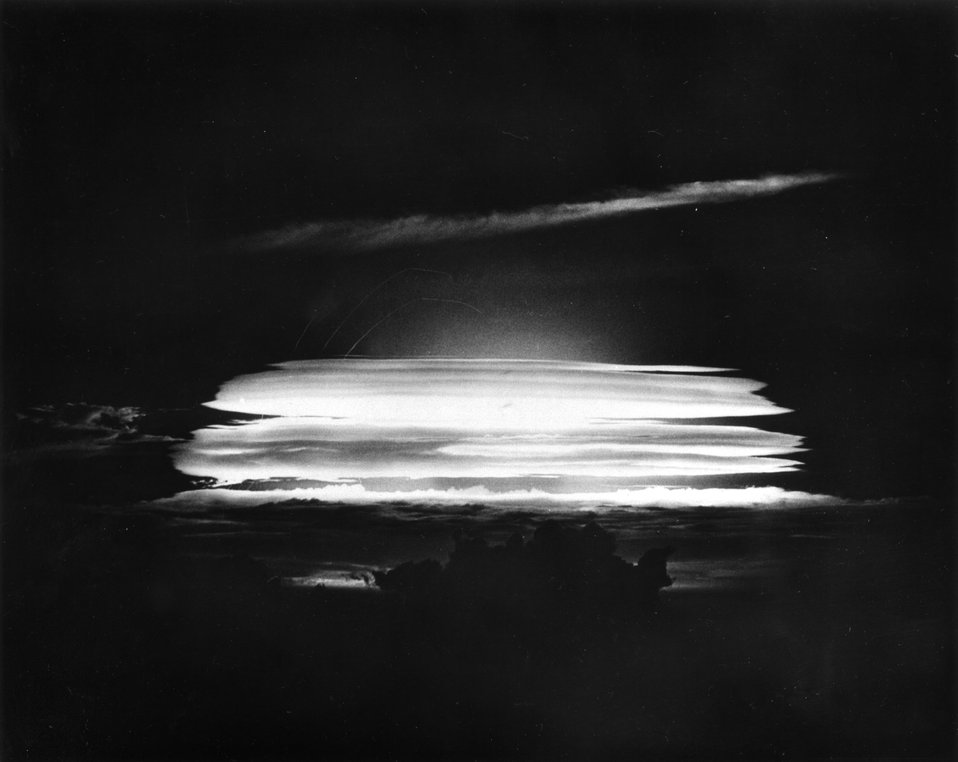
Fireball of the May 21, 1956 test detonation over Bikini Atoll.